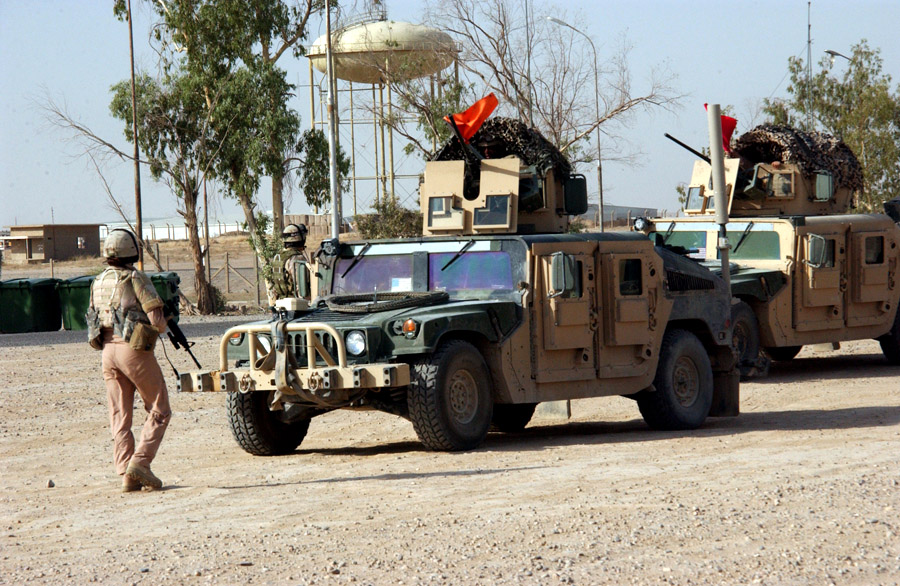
Security forces Airmen step outside the wire

Staff Sgt. Jessica Mohney exercises the gunner's response to an escalation of force incident during premission battle drills in July at Contingency Operating Base Speicher, Iraq. The drills are designed to simulate any possible situation the team may encounter while conducting missions outside the wire. Sergeant Mohney is assigned to the 732nd Expeditionary Security Forces Squadron Det. 1 police transition team. The police transition team's goal is to help the Iraqis establish a functioning, independent police force.